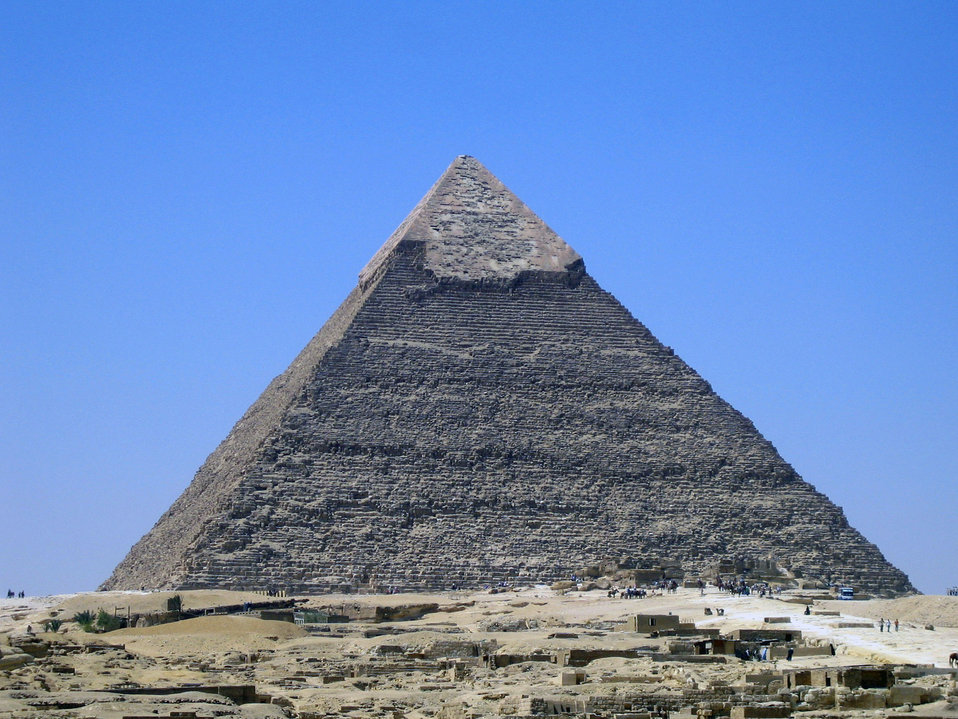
Pyramid

Egypt, pyramid.